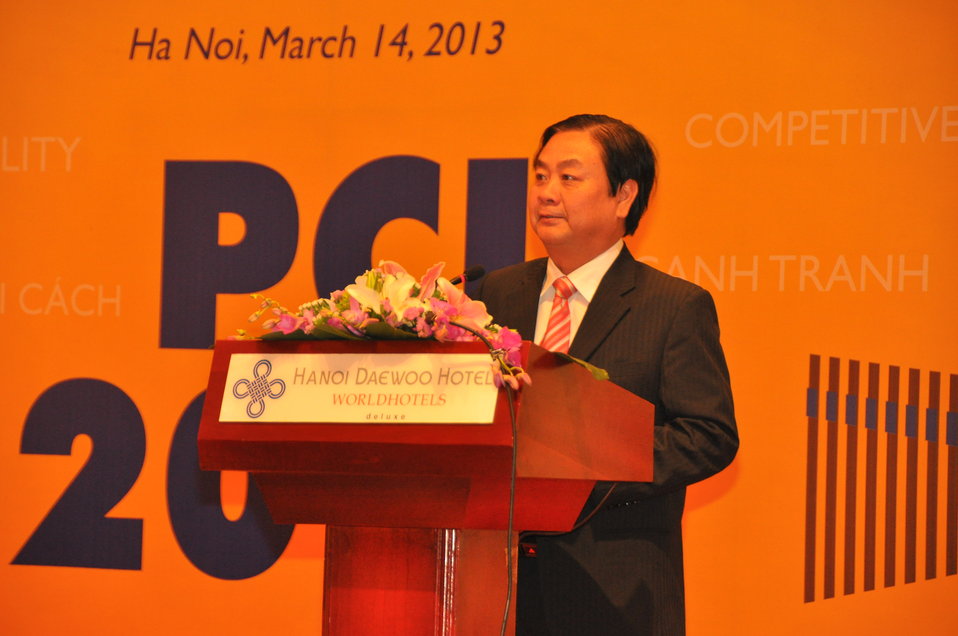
Provincial Competitiveness Index Launch, March 14, 2013

Hanoi, March 13, 2013